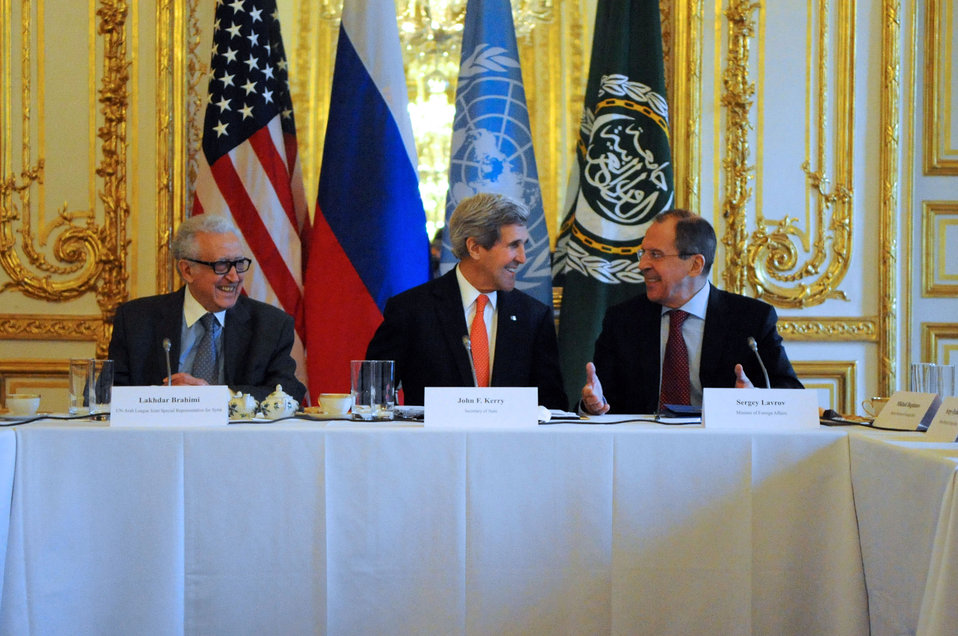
Secretary Kerry, Russian Foreign Minister Lavrov, and UN Special Representative Brahimi Meet in Paris

U.S. Secretary of State John Kerry shares a laugh with Russian Foreign Minister Sergey Lavrov and United Nations Special Representative for Syria Lakhdar Brahimi before a trilateral meeting in Paris, France, on January 13, 2014.